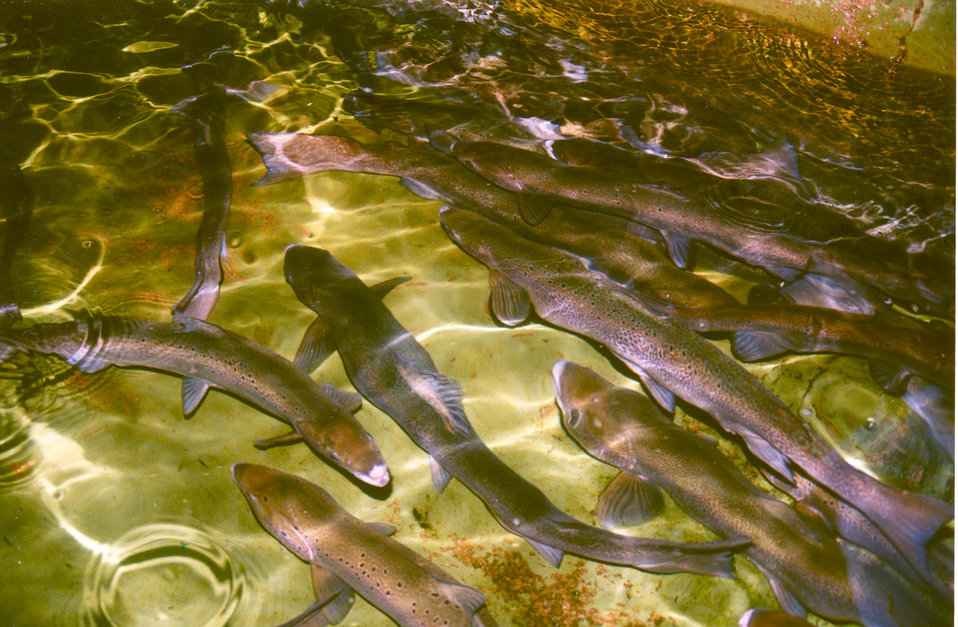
Atlantic Salmon Adults

Adult Atlantic salmon of the Penobscot River in Maine are seen in their holding pool before artificial spawning in November. Unlike Pacific salmon, Atlantic salmon don't usually die after spawning, and are therefore returned to their home river to migrate back to sea. They have the ability to return to their home river to spawn again if they can avoid predation.